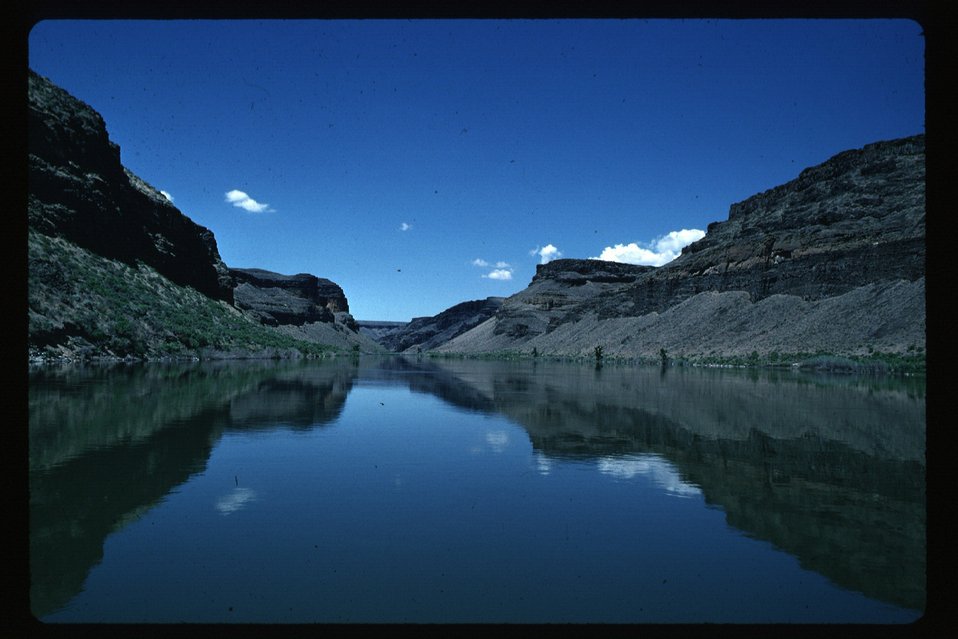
Snake River Canyon Owyhee Field Office LSRD Lower Snake River District